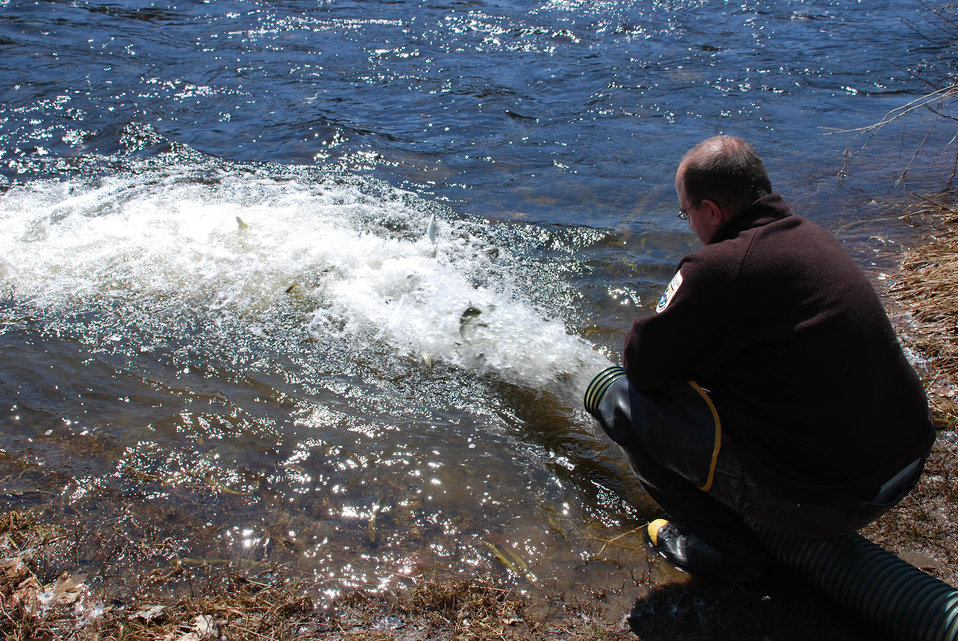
Releasing the Smolts

Keith Boyer holds the discharge hose to deliver the smolts into the river.